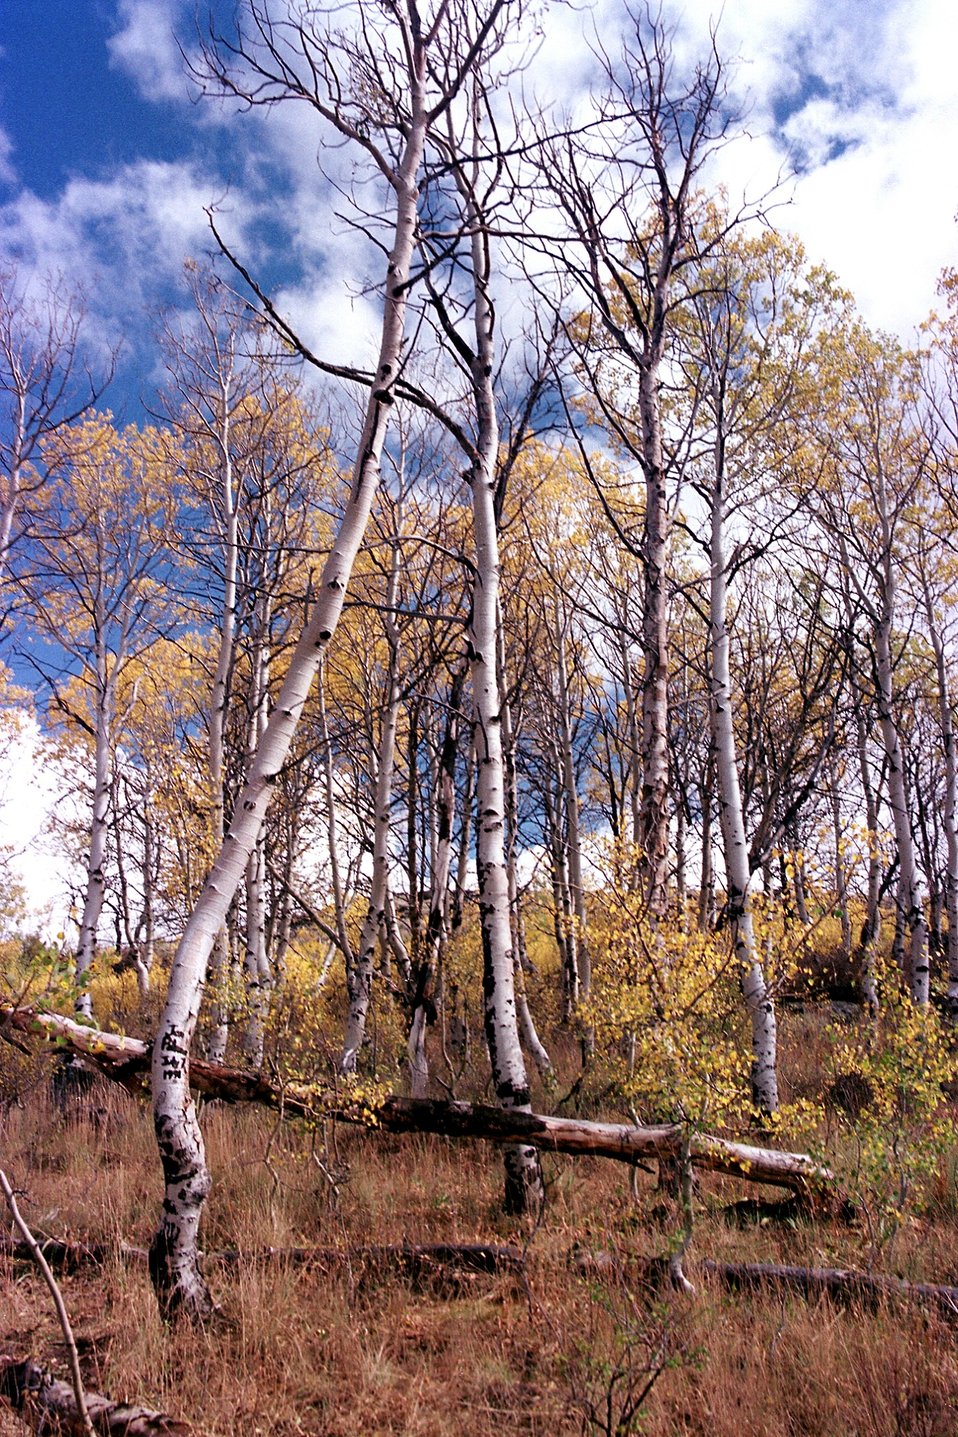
Aspens at Fish Lake, Steen's Mountain.